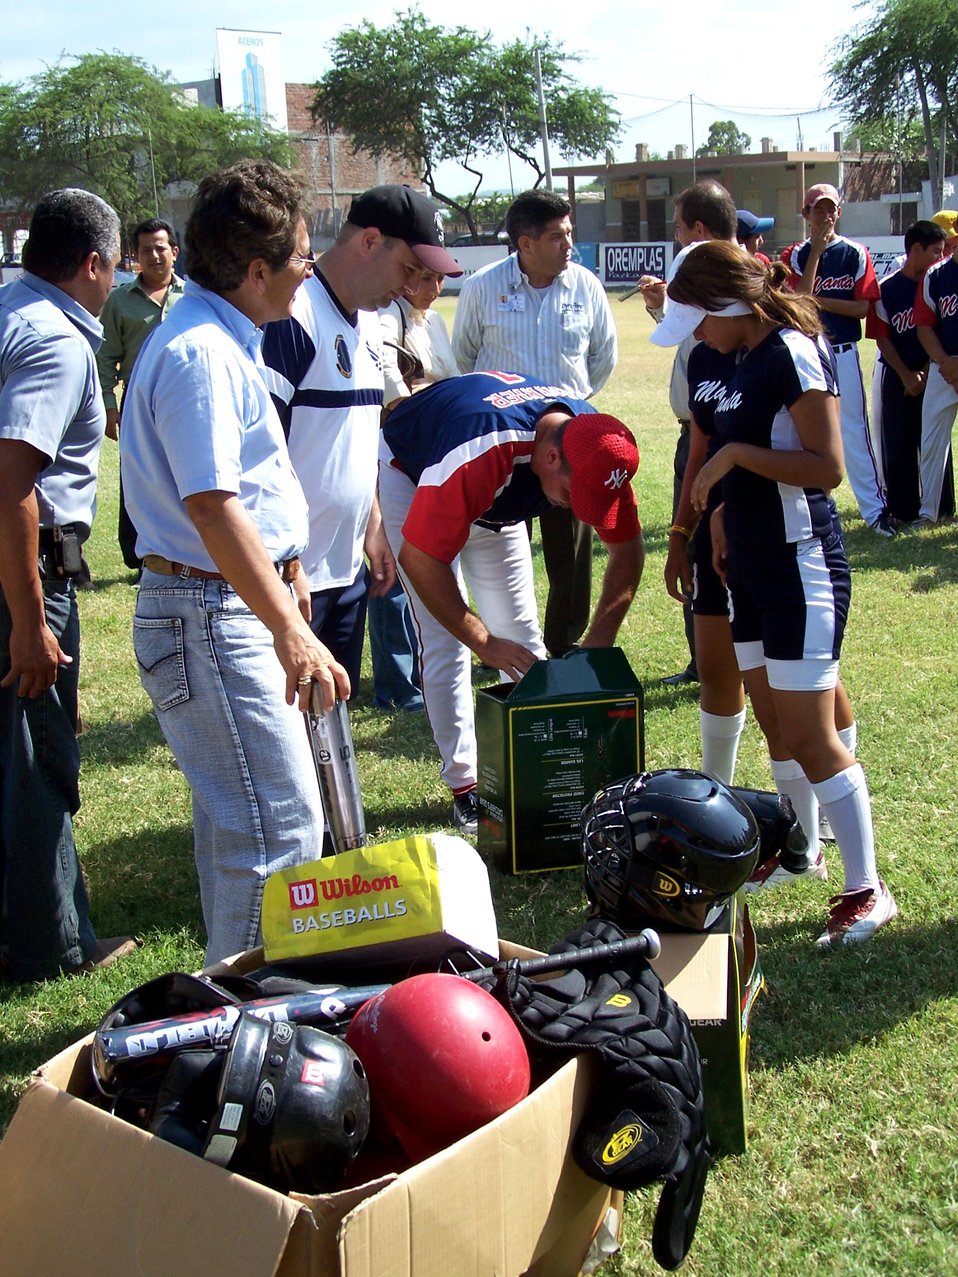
Manta Airmen score home run with community

Lt. Col. Javier Delucca (second from left) and Manta City Mayor Jorge Zambrano watch as Raynier Rabelo, Manta Baseball Academy director, opens the first box of donated baseball equipment. Colonel Delucca is commander of the 478th Expeditionary Operations Squadron.